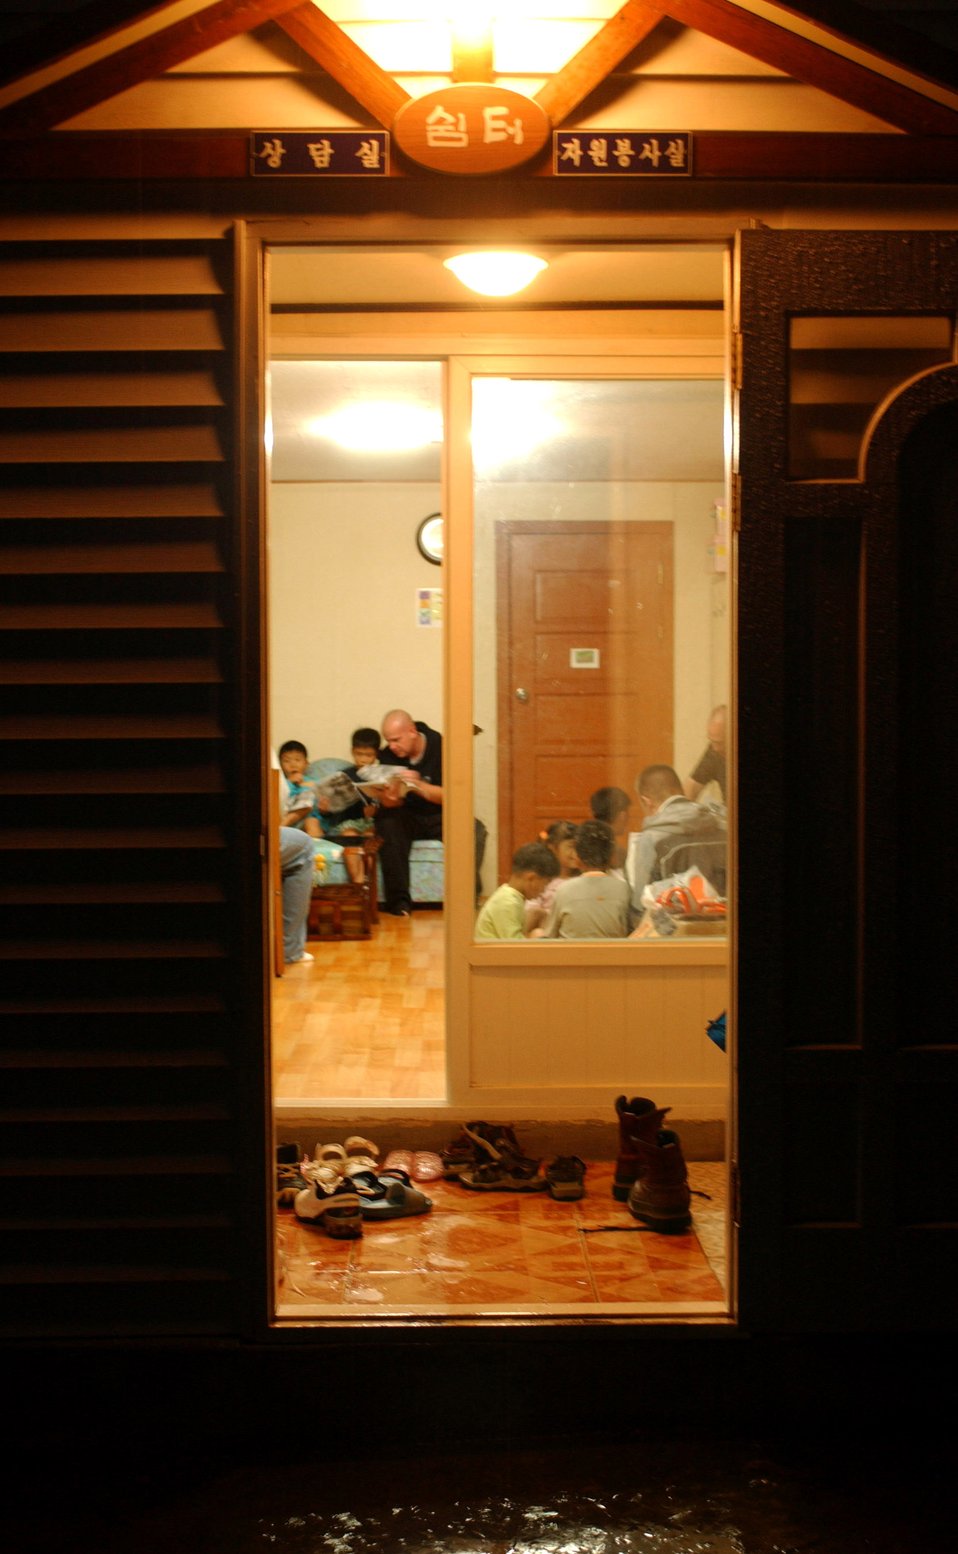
Good neighbors

Airmen from the 8th Logistics Readiness Squadron read books to children at the Gunsan Orphanage Sept. 5 at Gunsan City, South Korea. The 8th Logistics Readiness Squadron volunteered at the Kunsan Air Base Commissary in South Korea to raise money for the children at the Gunsan Orphanage as part of a Good Neighbor Program initiative. After presenting the money, they spent time with the children.